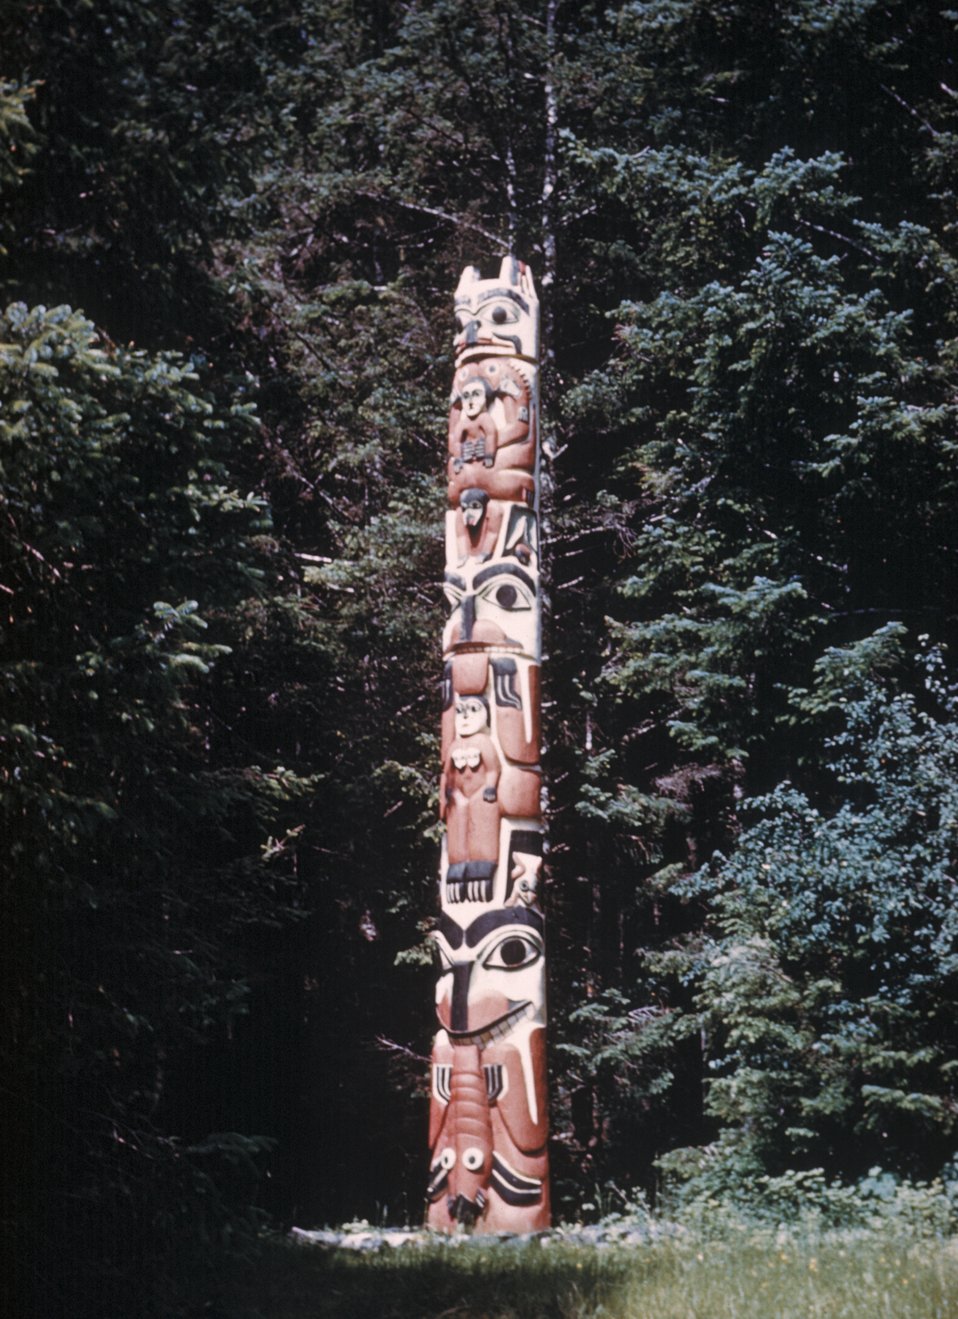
Totem pole at Sitka National Monument